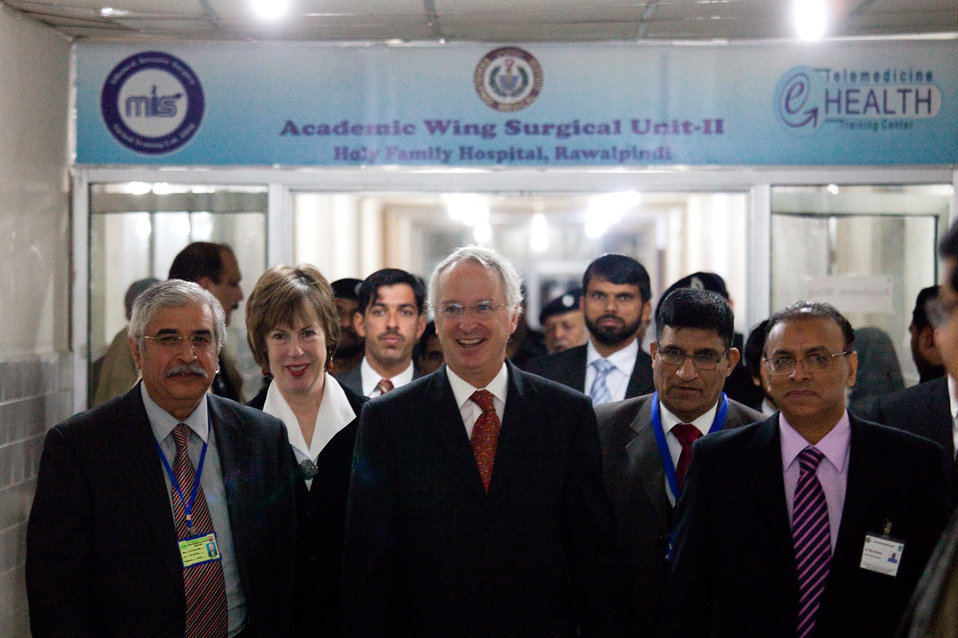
Telemedicine

Rawalpindi, January 5, 2012 – Ambassador Cameron Munter and his wife Dr. Marilyn Wyatt with Dr. Asif Zafar Malik, Project Director Telemedicine/ training at Holy Family Hospital in Rawalpindi

For more information on the U.S. assistance to Pakistan, Visit USAID Pakistan website:
pakistan.usaid.gov

Check our videos on USAID Pakistan YouTube page: